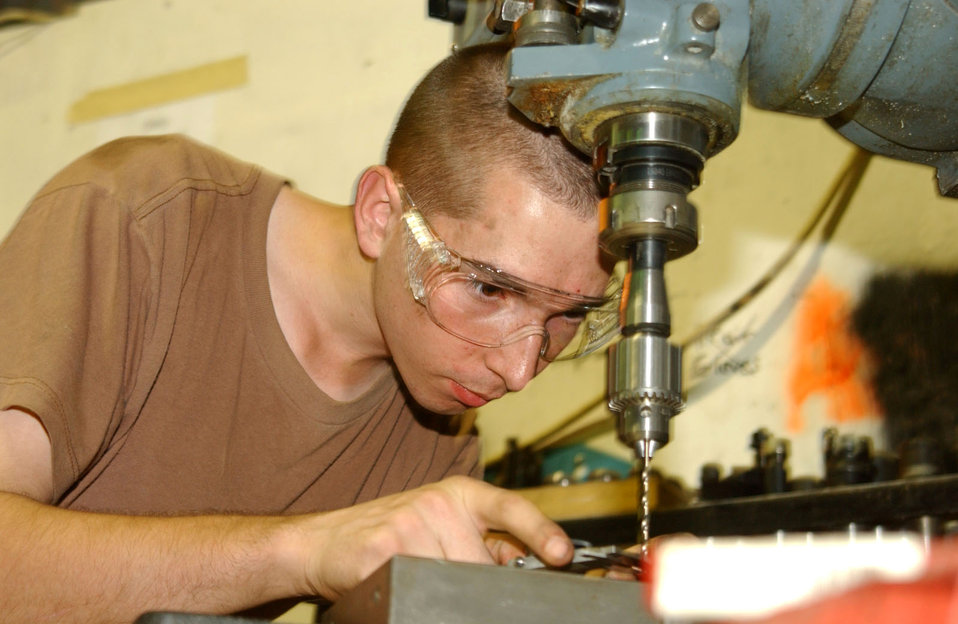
Metal techs spark airpower over Iraq

Senior Airman Daniel Lindsay uses a drill press at the metals technology shop in September at Balad Air Base, Iraq. Airman Lindsay is a Air National Guardsman deployed from Joe Foss Field, S.D., and assigned to the 332nd Expeditionary Maintenance Squadron.